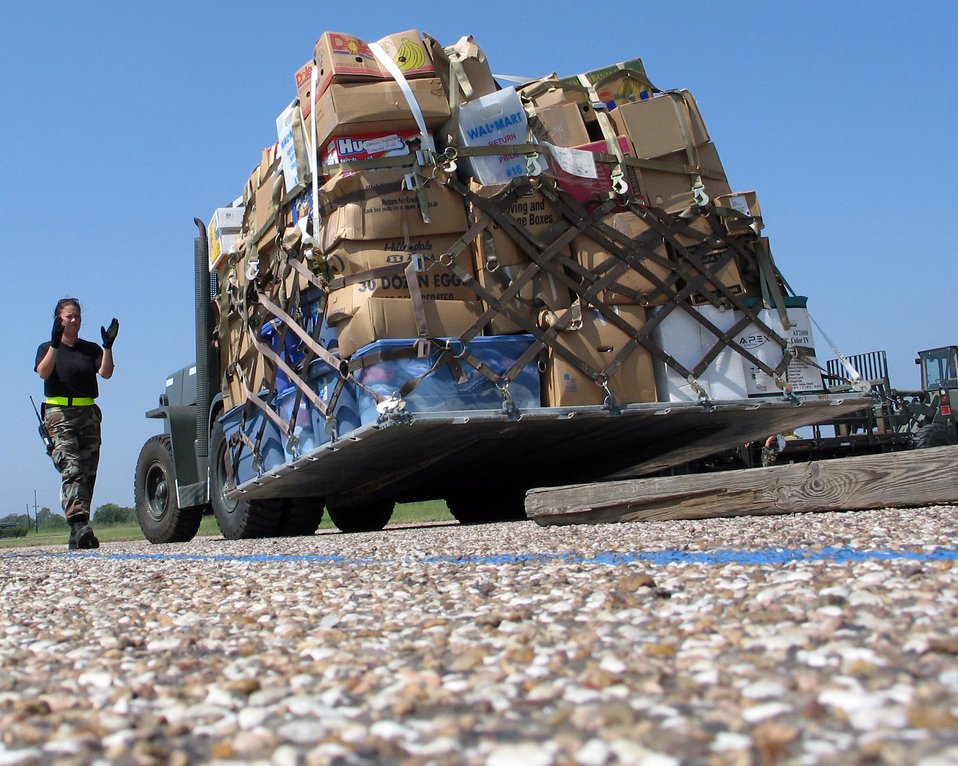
Hurricane Rita Humanitarian Relief

ELLINGTON FIELD, Texas -- Staff Sgt. Colleen Jenkins marshals a pallet of donated supplies into place on a ramp here for use in the Hurricane Rita relief effort. The supplies, moved Sept. 26, were donated by the Missouri Air National Guard. Sergeant Jenkins is an air transportation journeyman with the 136th Aerial Port Squadron at Naval Air Station-Joint Reserve Base Fort Worth, Texas.